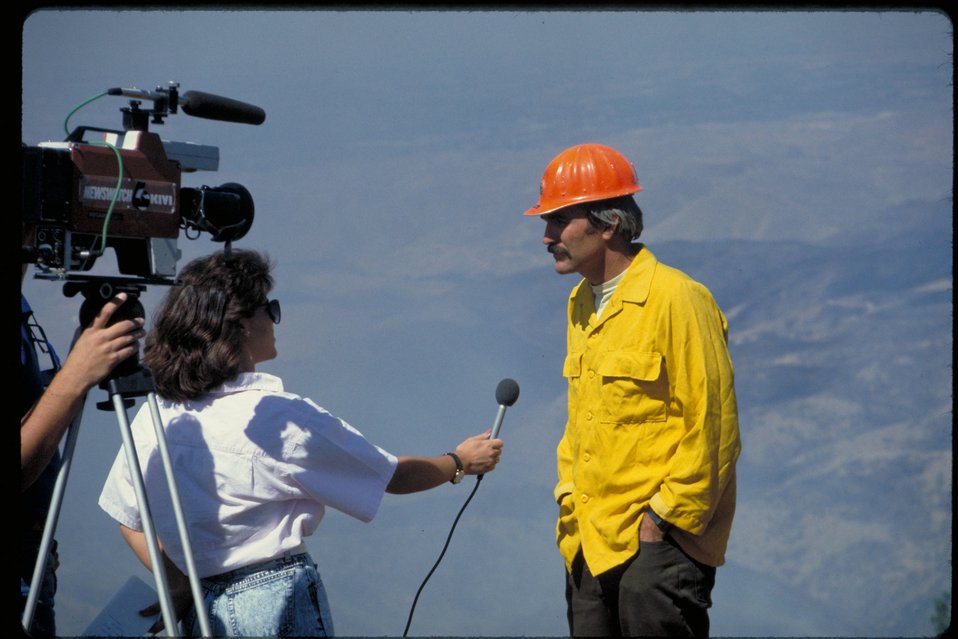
Fireboss TV interview Foothills fire Boise Front Four Rivers Field Office LSRD Lower Snake River District